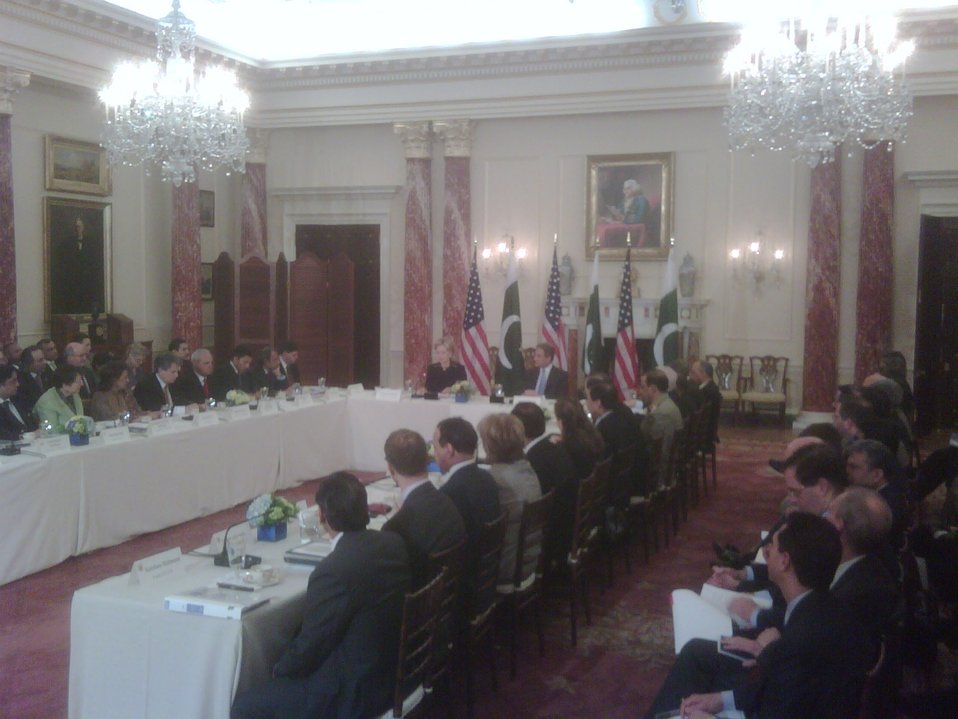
Opening of the U.S. Pakistan Strategic Dialogue Meeting

U.S. Secretary of State Hillary Rodham Clinton speaks at the opening of the U.S. Pakistan Strategic Dialogue meeting at the U.S. Department of State in Washington, D.C., March 24, 2010.